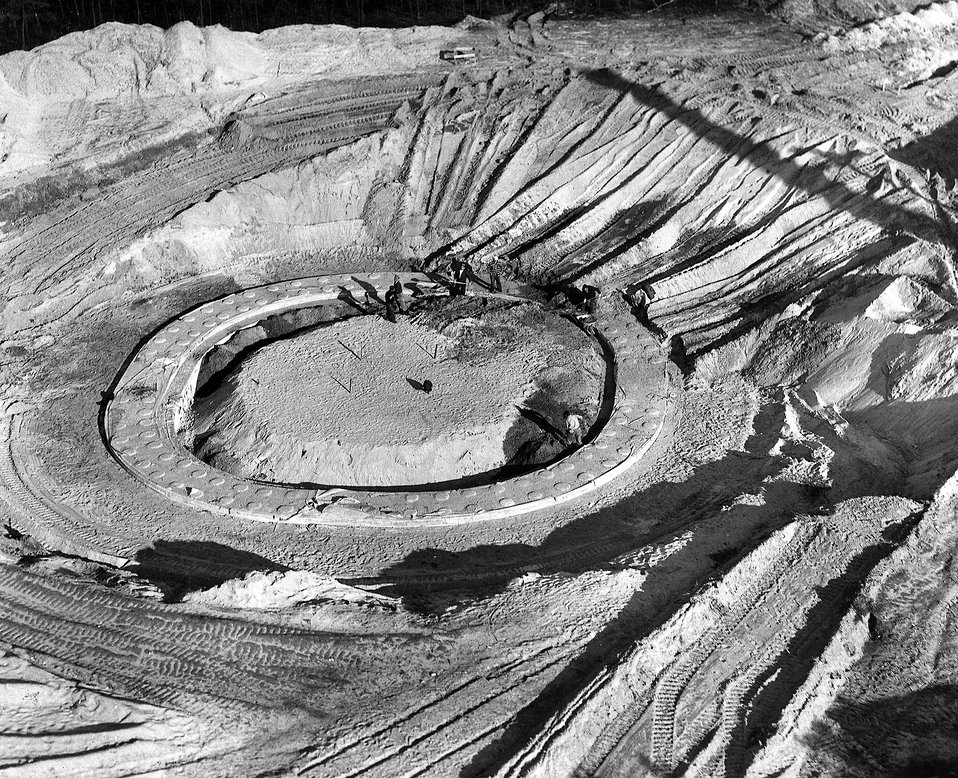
A view of the magnet ring foundation. c. 1949